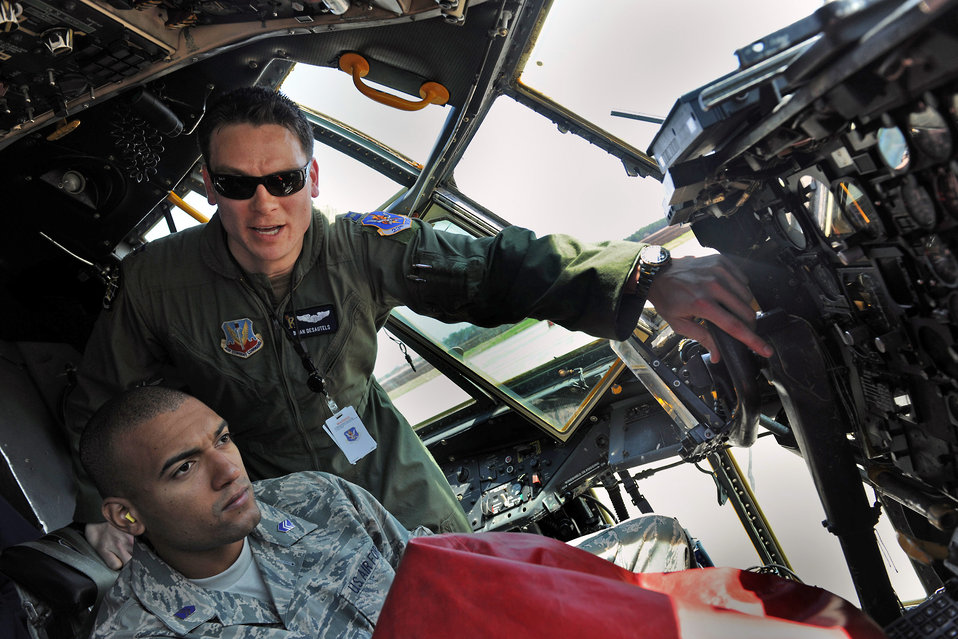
Cadets get a taste of Moody's mission, active-duty life

Capt. Brian Desautels gives a tour of a C-130 Hercules cockpit to Cadet 3rd Class Bruce Padilla from the University of Puerto Rico Air Force ROTC Detachment 755 during a base tour March 23, 2010, at Moody Air Force Base, Ga. Captain Desautels is the 71st Rescue Squadron mobility flight commander.